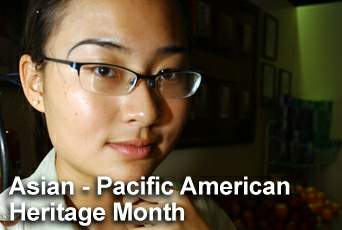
Asian-Pacific American Heritage Month

May is Asian-Pacific American Heritage Month and events throughout the month will highlight the culture and achievements of Asian-Pacific Americans.